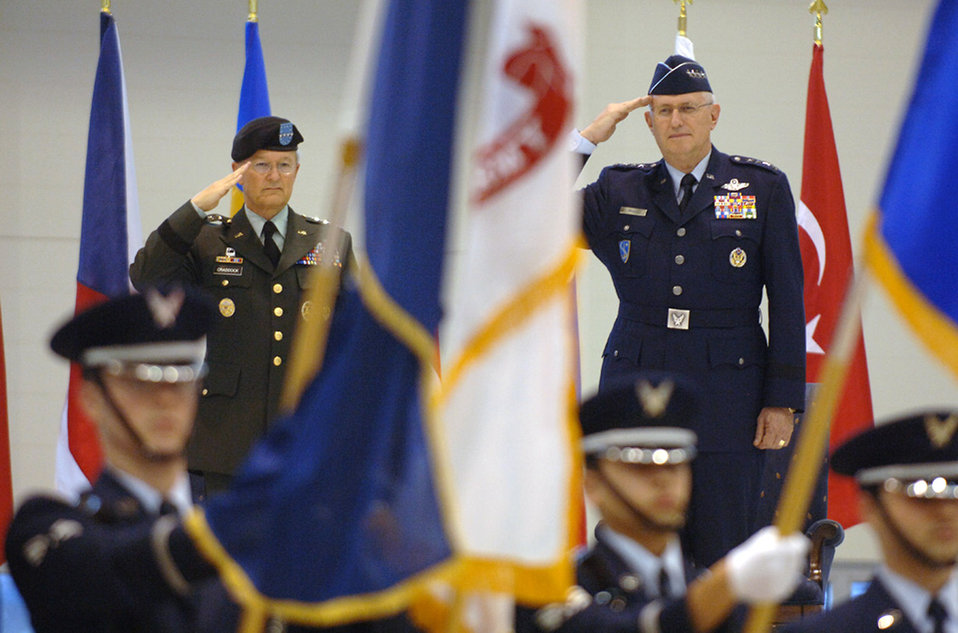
General Brady assumes command of USAFE

Gen. Roger A. Brady and Gen. John Craddock salute during the Jan. 17 assumption of command ceremony at Ramstein Air Base, Germany. General Brady is the new U. S. Air Forces in Europe commader and General Craddock is the Supreme Allied Commander, Europe. As USAFE commander, General Brady also has three other titles: commander, Allied Air Component Command Ramstein; air component commander, U.S. European Command, Ramstein AB, Germany; and director, Multinational Joint Air Power Competence Center, Kalkar, Germany.